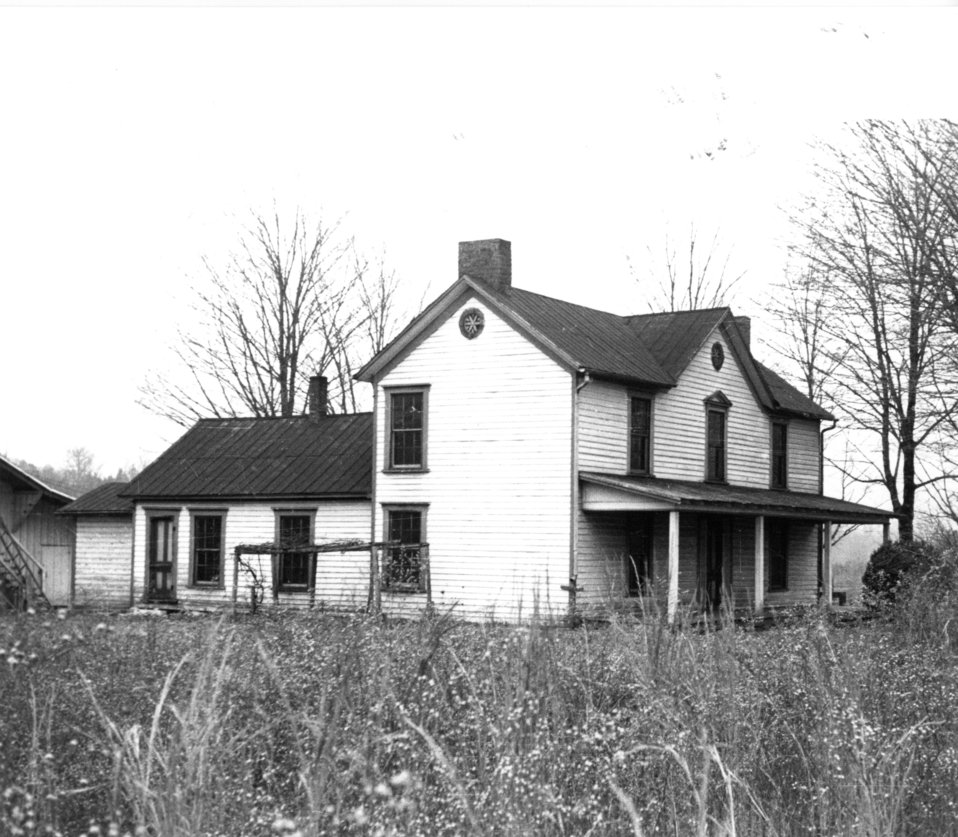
Early settlers at Oak Ridge